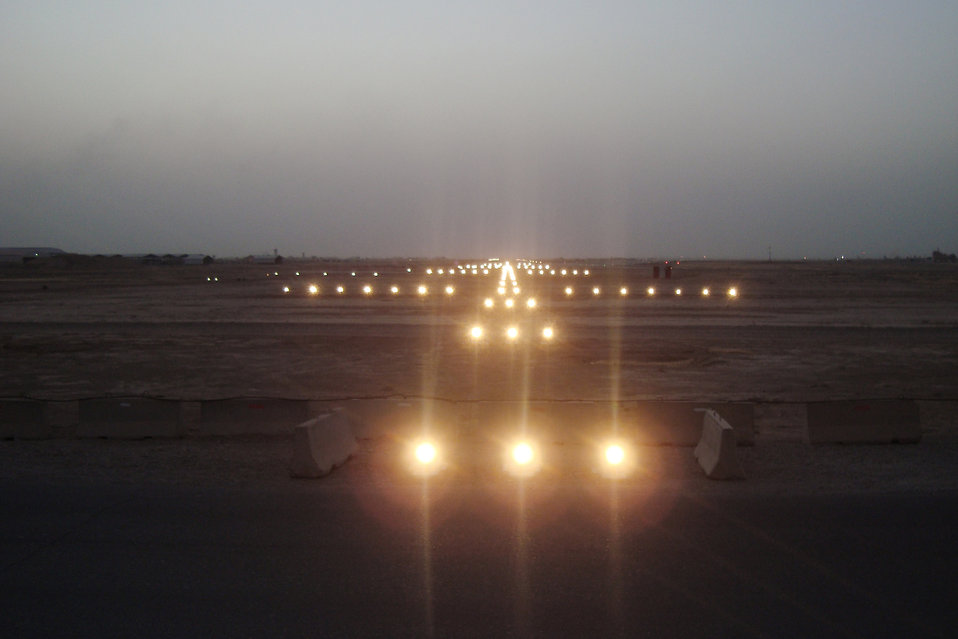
Transfer of navigational aids to Iraqi air force

Runway approach lights, along with a digital airport surveillance radar system, various navigational aids and other equipment, were part of the suite of equipment officially turned over to the Iraqi air force during a ceremony Oct. 26, 2009, at Kirkuk Air Base. The Electronic Systems Center, headquartered at Hanscom AFB, Mass., provided the equipment via foreign military sales procedures.